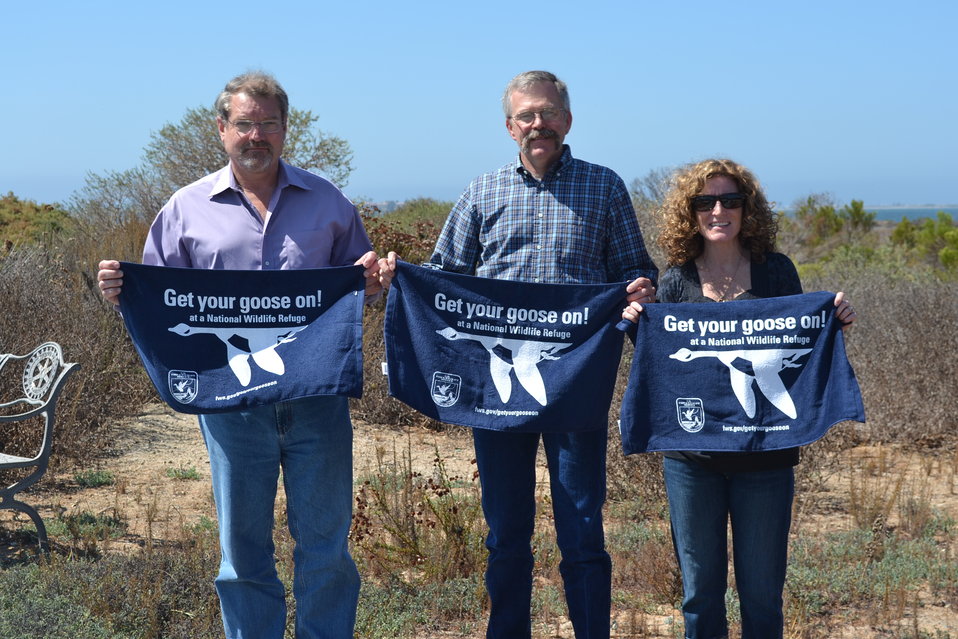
Get Your Goose On! - San Diego Style

Marla Trollan, Paul McKim and Larry Bell Get Their Goose On! at the San Diego National Wildlife Refuge.